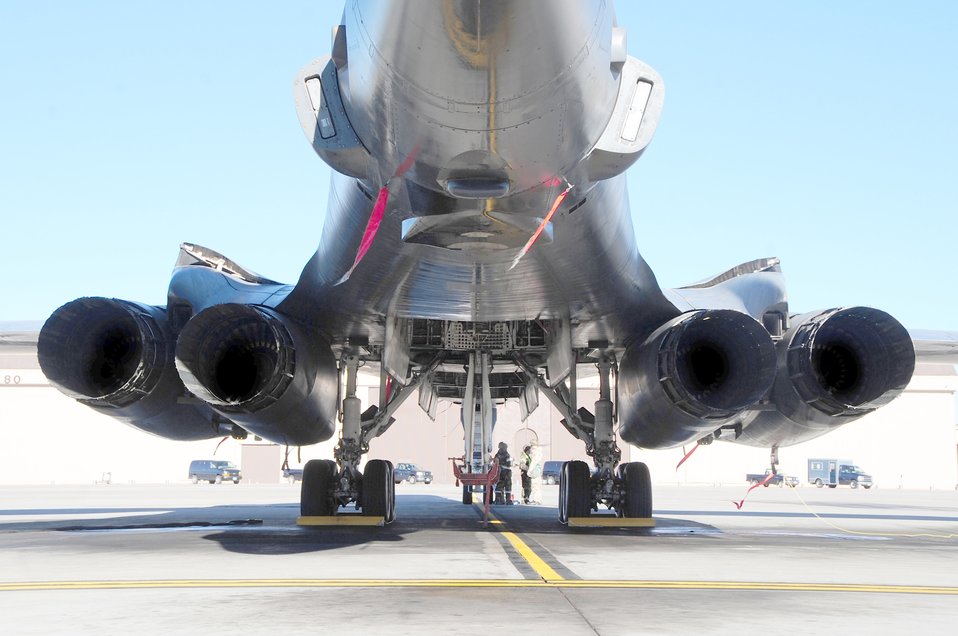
Massive bomber overhead

Airmen check over a technical order while working on a B-1B Lancer during a Phase II Operational Readiness Inspection Oct. 15, 2010, at Ellsworth Air Force Base, S.D. Maintenance Airmen use the technical orders to ensure safety and accuracy. The Airmen are assigned to the 28th Aircraft Maintenance Squadron.